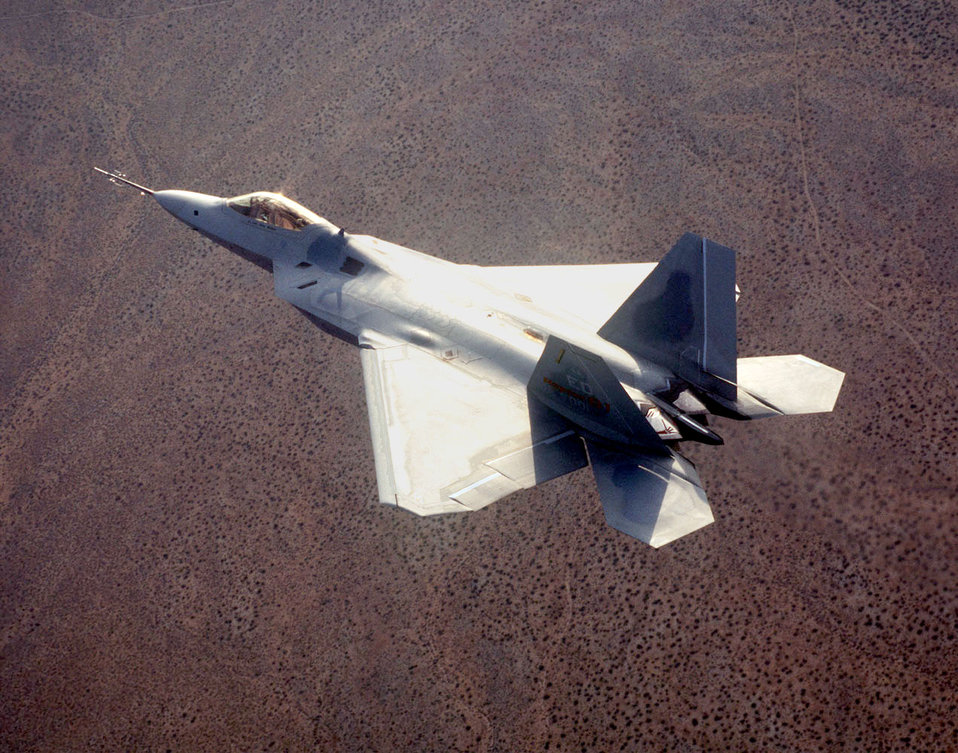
F/A-22 Raptor

FILE PHOTO -- The application of advanced avionics software in the F/A-22 is key to the Raptor's revolutionary performance advantage over any other fighter. In the air-to-air arena, the stealthy F/A-22 will be virtually unseen on radar, while its sophisticated array of sensors and advanced radar will allow it to reach out and strike adversary aircraft undetected from long range. The advanced software package will also enhance the Raptor's ability to deliver precision air-to-surface weapons on target, day or night, in any weather.